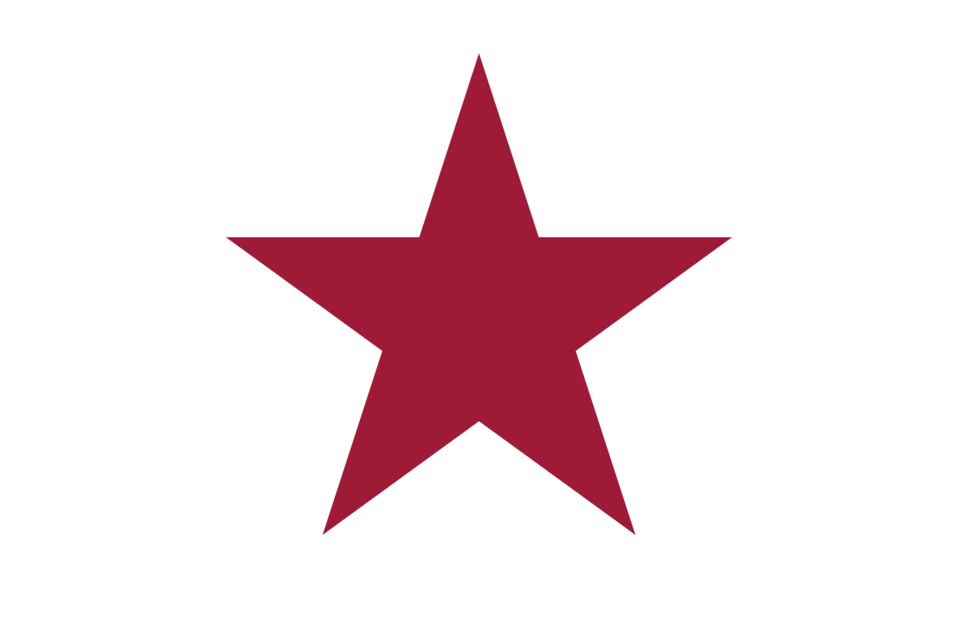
This is the 1836 California Lone Star Flag. It was raised in a revolt against the Mexican Government in 1836 by Juan Alvarado and Isaac Graham. Although their capture of Monterey did not succeed in independence for California, it inspired the Bear Flag Revolt flag.